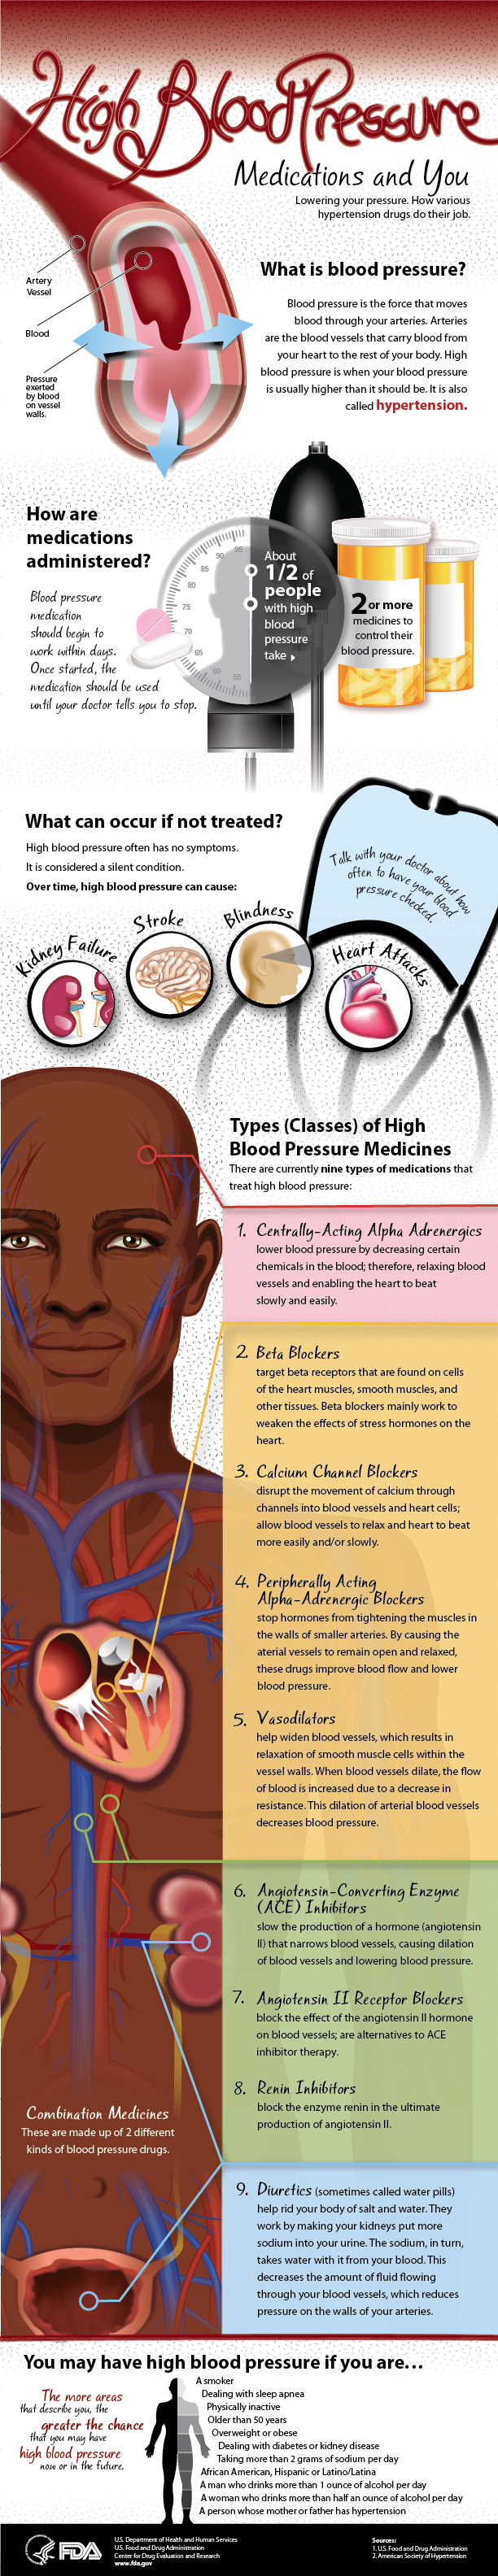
High Blood Pressure: Medications and You

High blood pressure often has no symptoms. Over time, it can cause kidney failure, stroke, blindness and heart attacks. Learn how various hypertension drugs help lower your blood pressure.